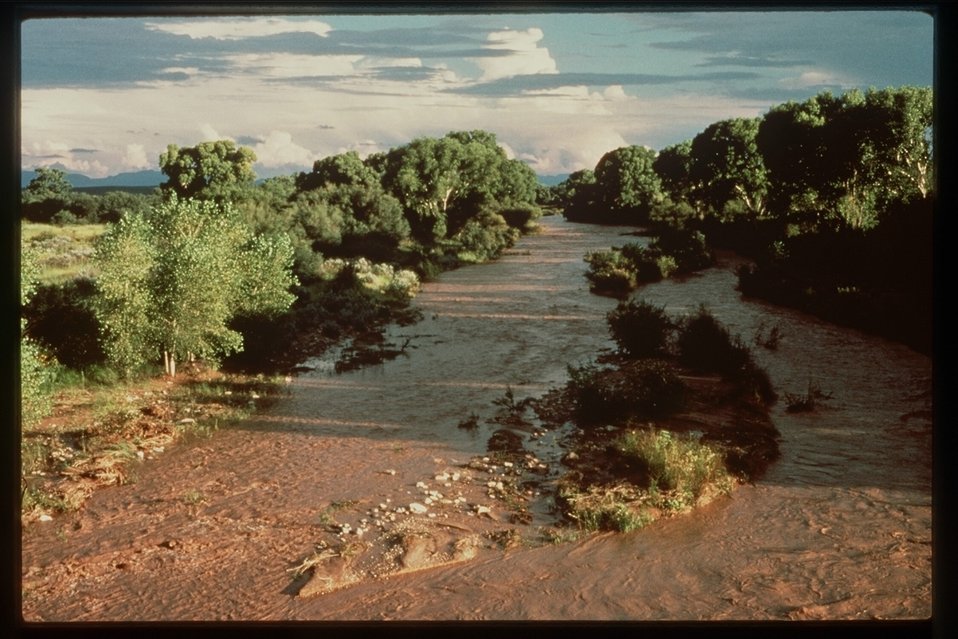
The San Pedro Riparian National Conservation Area, containing about 40 miles of the upper San Pedro River, was designated by Congress as a National Conservation Area (NCA) on November 18, 1988.